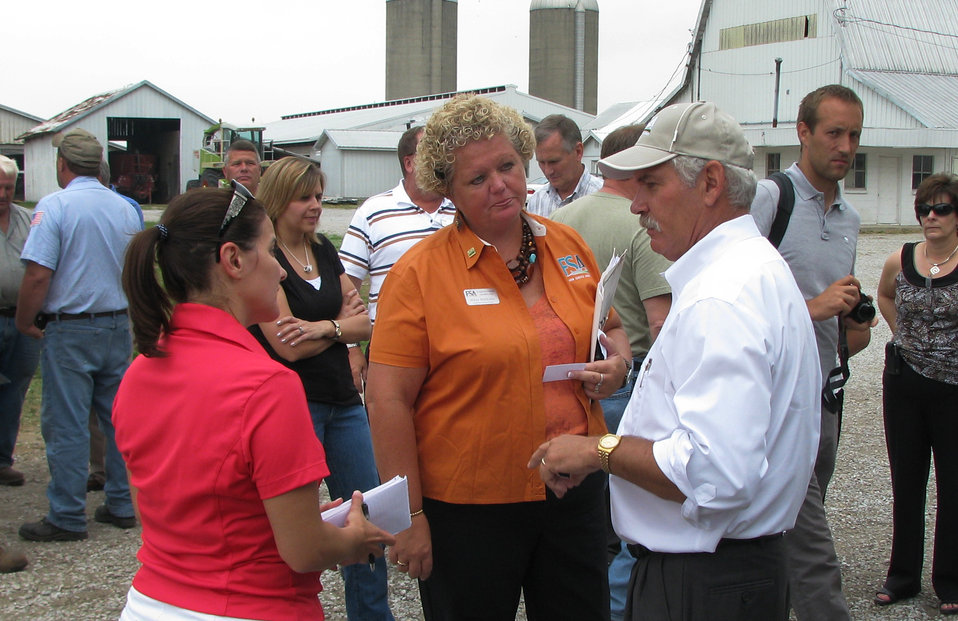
Agriculture Under Secretary for Farm and Foreign Agriculture Service (FFAS) Michael Scuse (right) and Farm Service Agency (FSA) Indiana Executive Director Julia A. Wickard (center) speak with a farm reporter in Whiteland, IN on Thursday, July 19, 2012. Agriculture Secretary Vilsack has instructed Agriculture subcabinet leaders to travel to affected drought areas to augment ongoing assistance from state-level U.S. Department of Agriculture (USDA) staff and provide guidance on USDA’s new, streamlined disaster process. The U.S. Drought Monitor currently reports that 61 percent of the continental United States is in a moderate to exceptional drought.